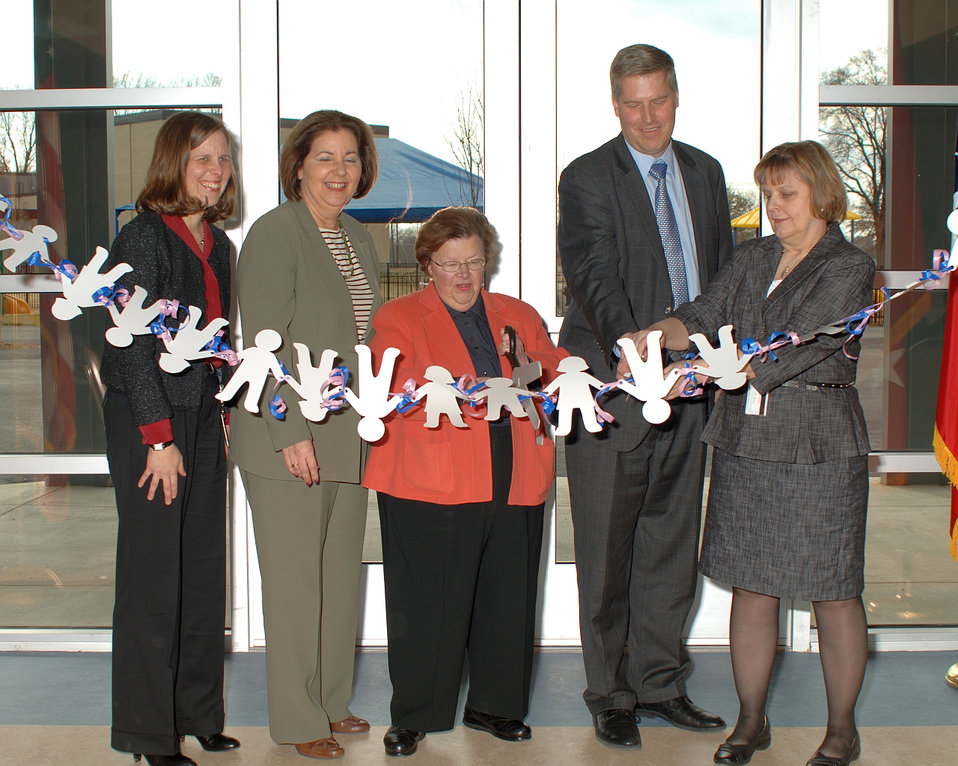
Child Care Center Ribbon Cutting Ceremony

Maryland Senator Barbara Mikulski (center) is joined at NIST Child Care Center (CCC) Ribbon Cutting by: (from left to right) Carrie Campbell, CCC Association Director; Stella Fiotes, Director, NIST Office of Facilities Management; Patrick Gallagher, NIST Director, Jolene Wayne, CCC Director.